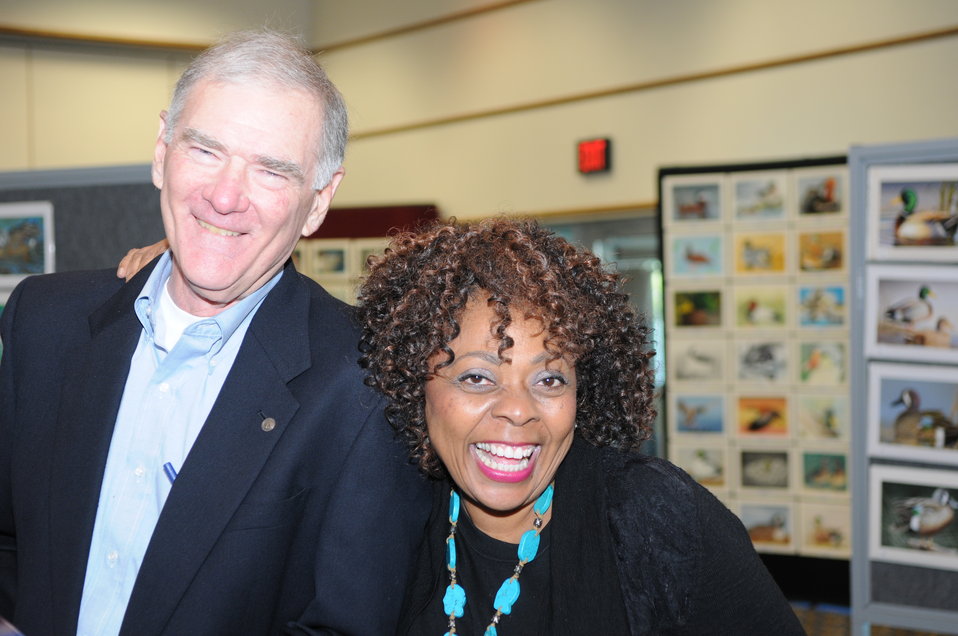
John Cornely and Mamie Parker, two contest judges excited for the final day of judging.